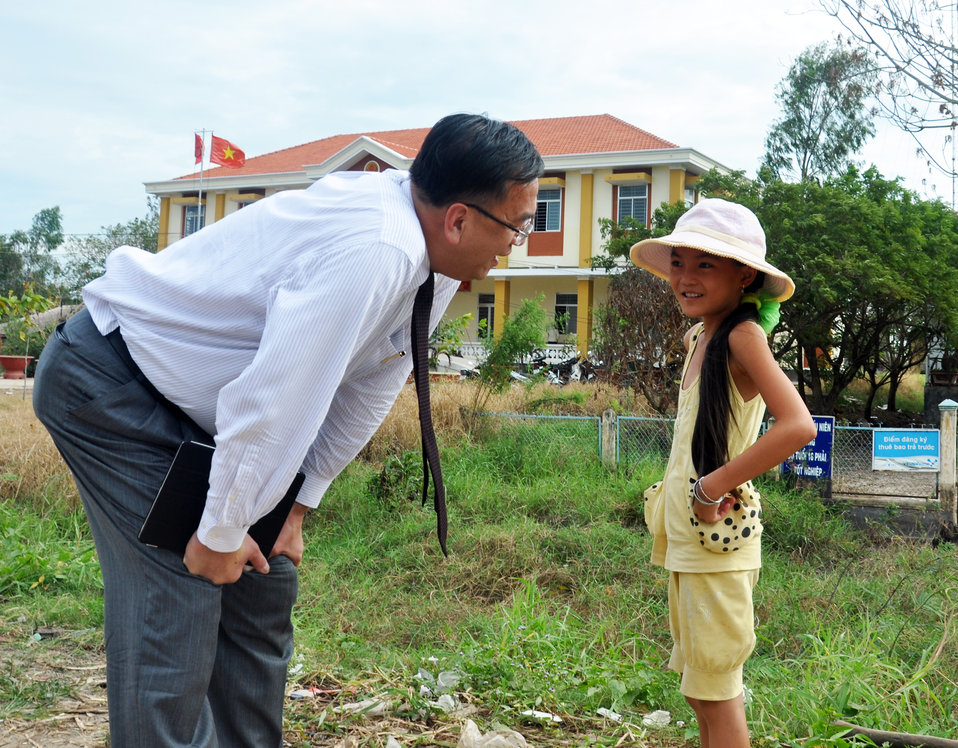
U.S. Consul General Le An visits USAID beneficiaries

USAID site visit to Long An Province to visit flood relief beneficiaries